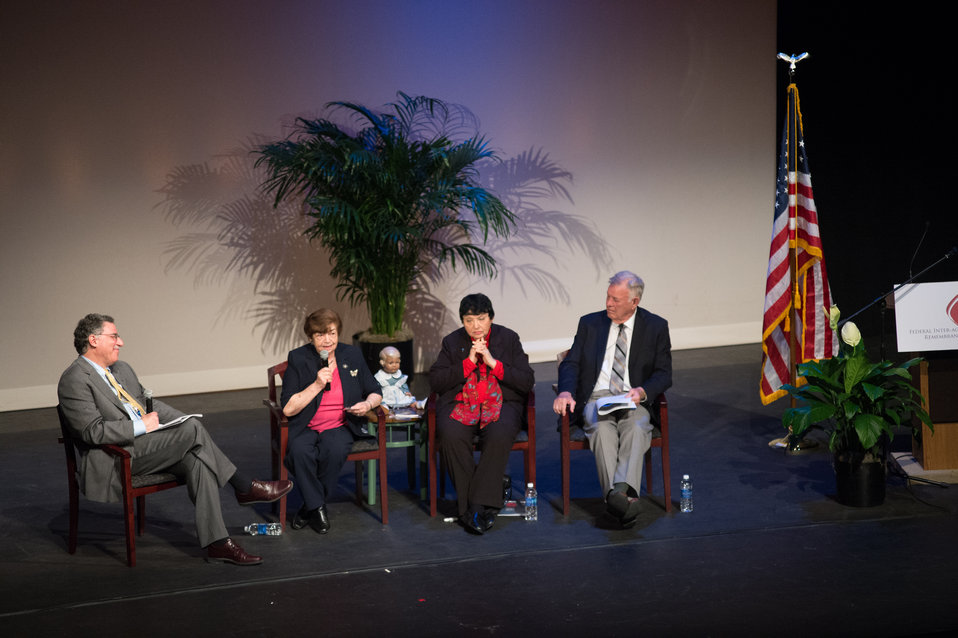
The 2013 Federal Inter-Agency Holocaust Remembrance Day, at the Lincoln Theater, on Wednesday, April 17, 2013, in Washington, D.C. The moderator is United States Holocaust Memorial Museum Division of the Senior Historian Director Peter Black, Ph.D., at podium or seated on left, and the guest speakers, left to right, are Theresienstadt Concentration Camp Czech Jewish Holocaust Survivor Ela Stein-Weissberger, and German Jewish Holocaust Survivor Inge Auerbacher; and Dachau Concentration Camp Liberator Jimmy Gentry. Since the 1979 President’s Commission on the Holocaust, an annual proclamation signed by the President of the United States recognizes the importance of remembering the atrocities of the Holocaust that should never be forgotten or be ignored.